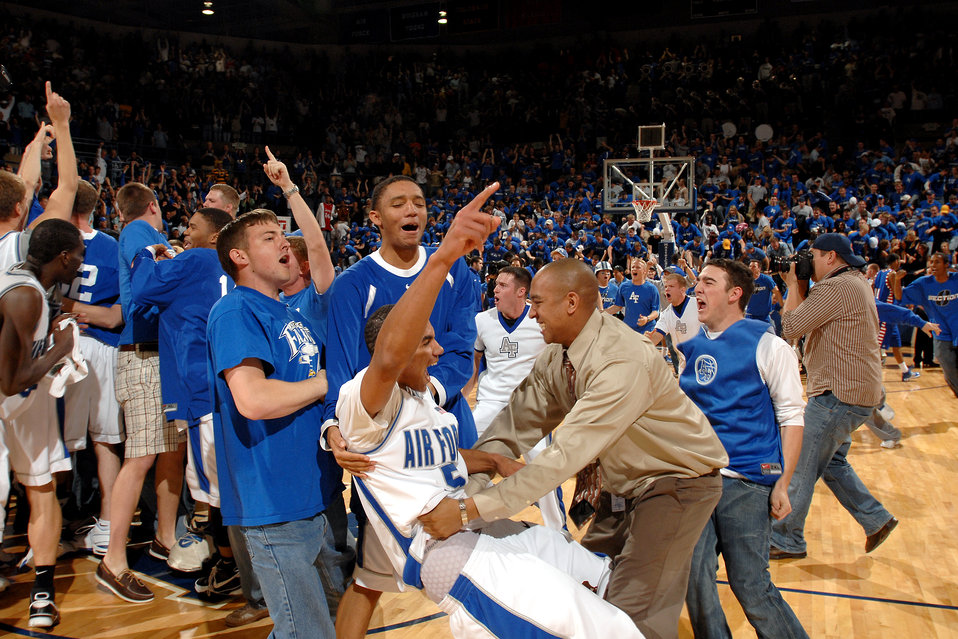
Falcons reach NIT final four in NYC

Falcon guard Matt McCraw, 5, fans and teammates celebrate Air Force's 52-51 win over DePaul March 21 at Clune Arena. The victory earned the bluesuiters a berth in the NIT semifinals in New York City's Madison Square Garden March 27 against Clemson.